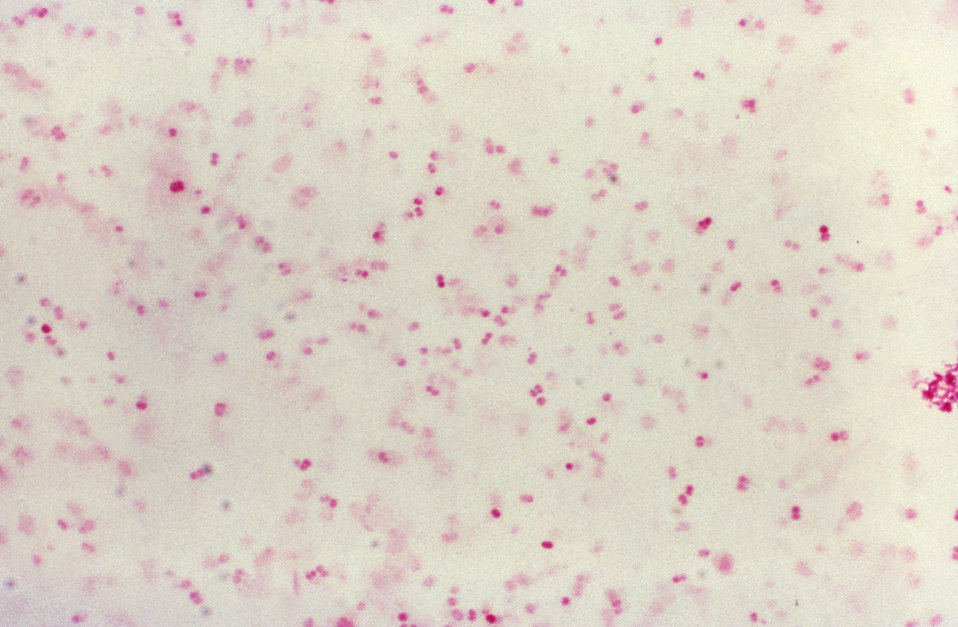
This Gram-stained photomicrograph revealed the presence of numerous gram-negative diplococcal bacteria that were identified as Neisseria gonorrhoea.